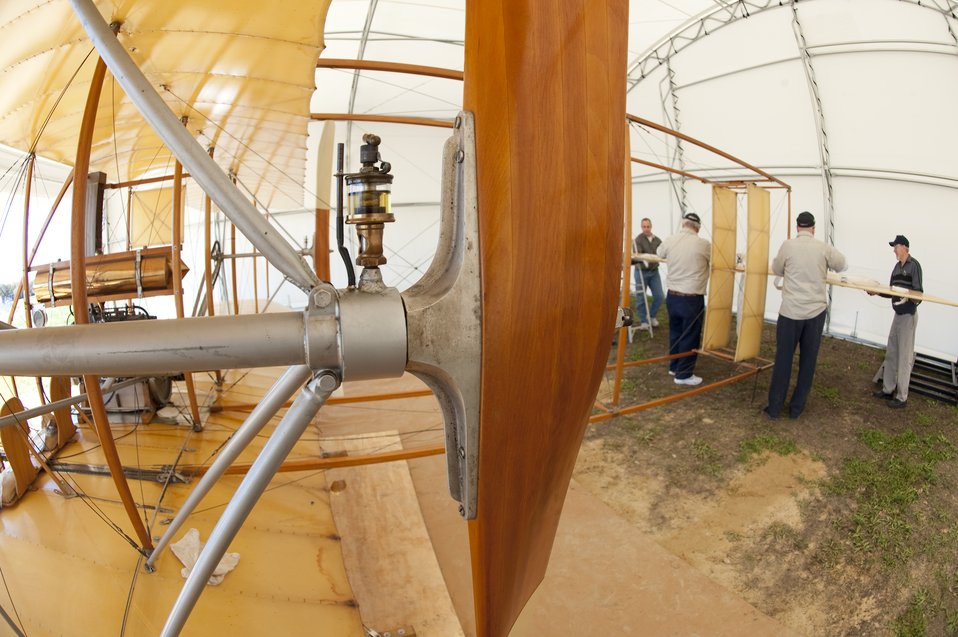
Wright

Close up of the left oiler and wood propeller of a Wright